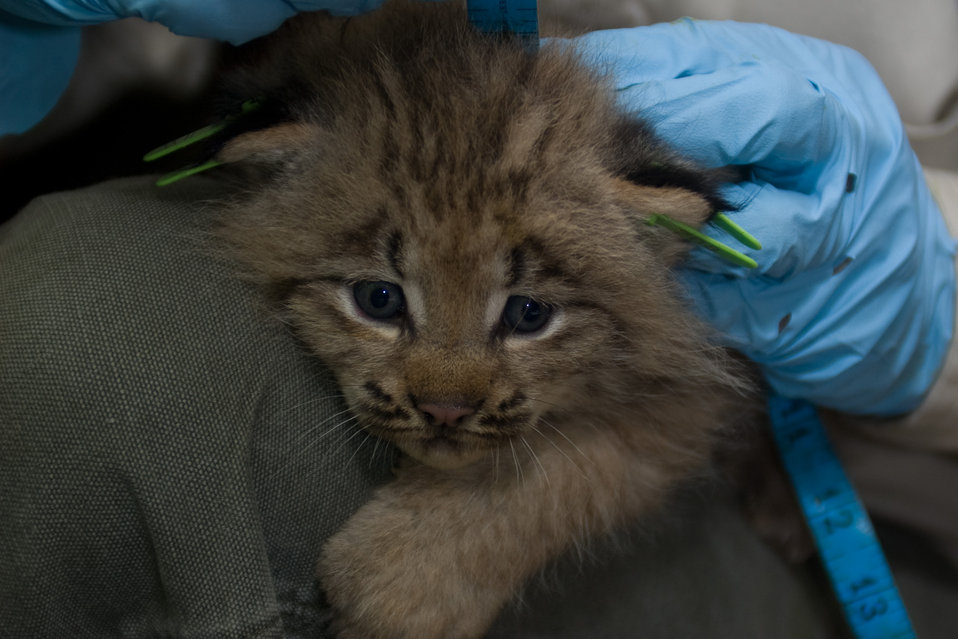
Canada Lynx kitten being measured

A lynx kitten is measured by a wildlife biologist.